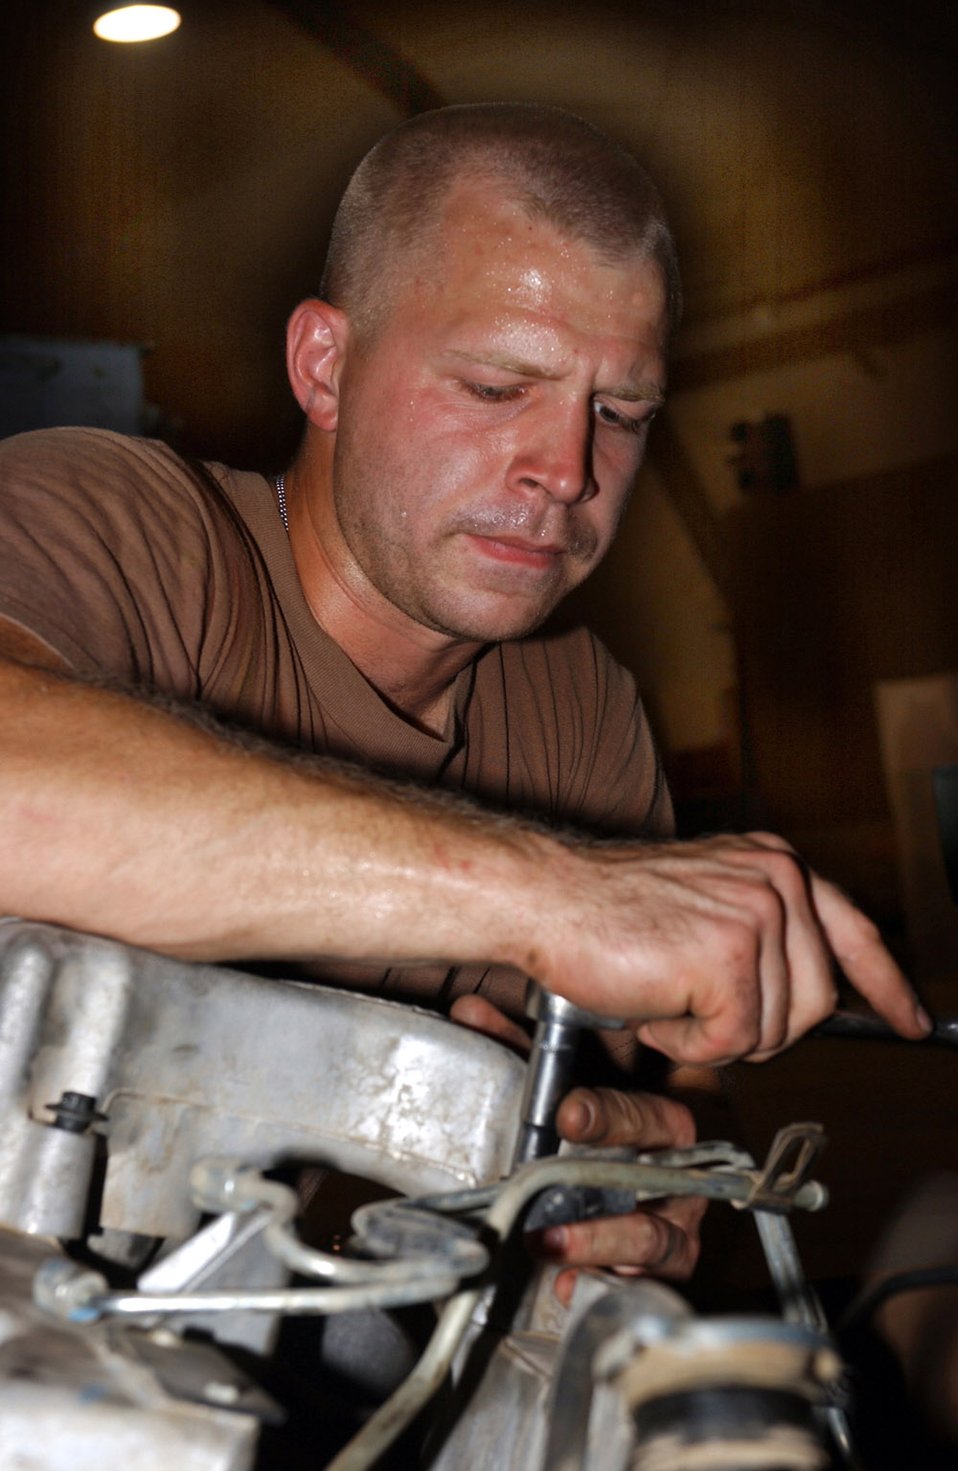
Mechanics keep war effort rolling

BAGHDAD, Iraq -- Staff Sgt. Shawn Thompson installs a turbocharger during a Humvee engine change here. He is a vehicle mechanic with the 447th Expeditionary Logistics Readiness Squadron and is deployed from Kadena Air Base, Japan.